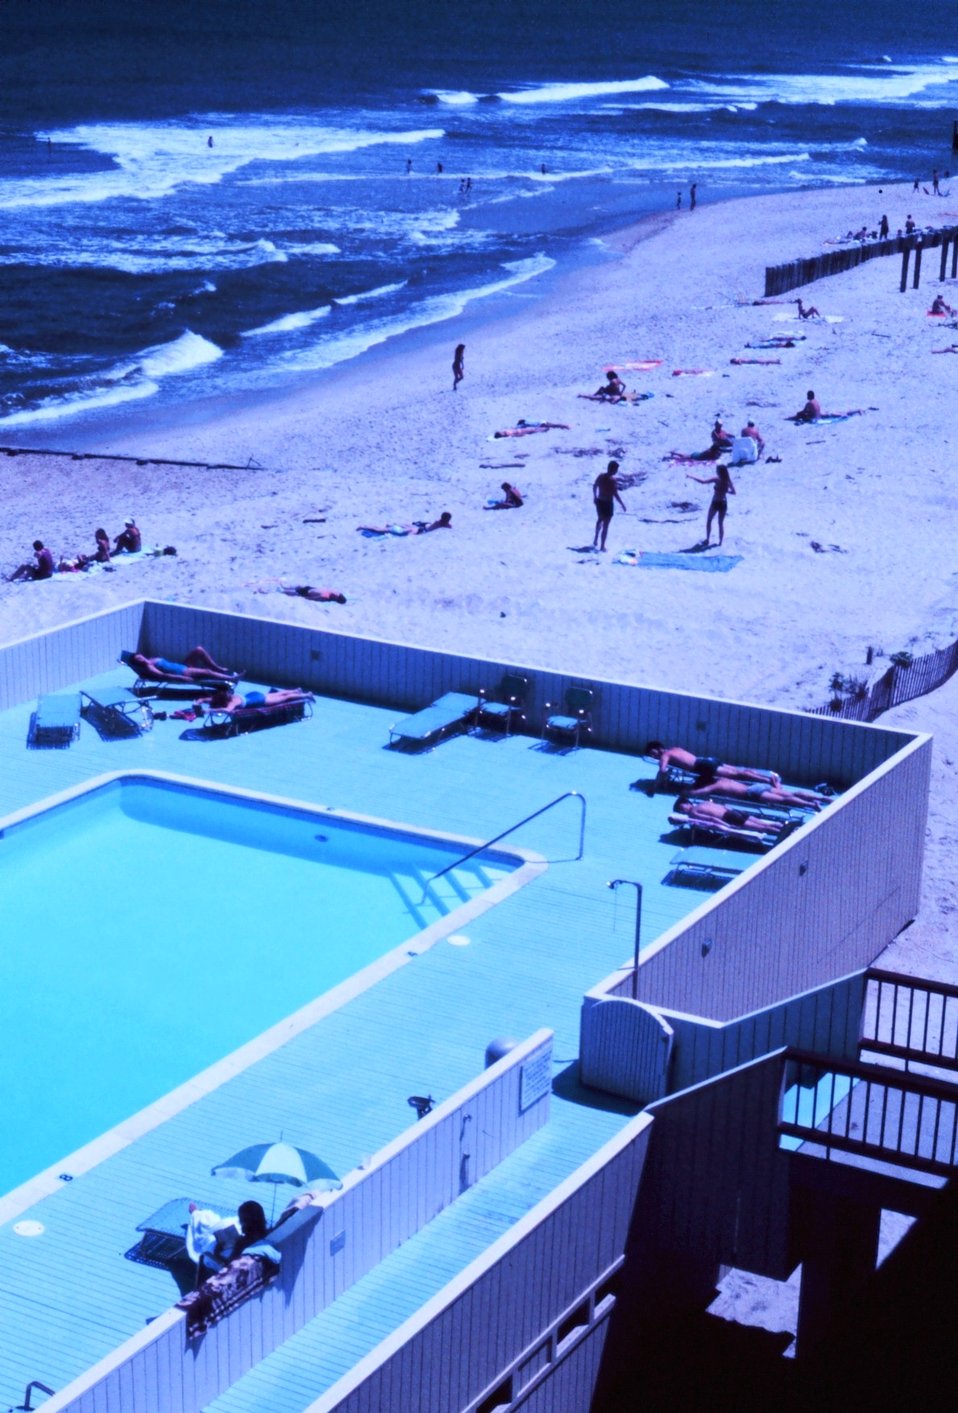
View of the beach at Ocean City